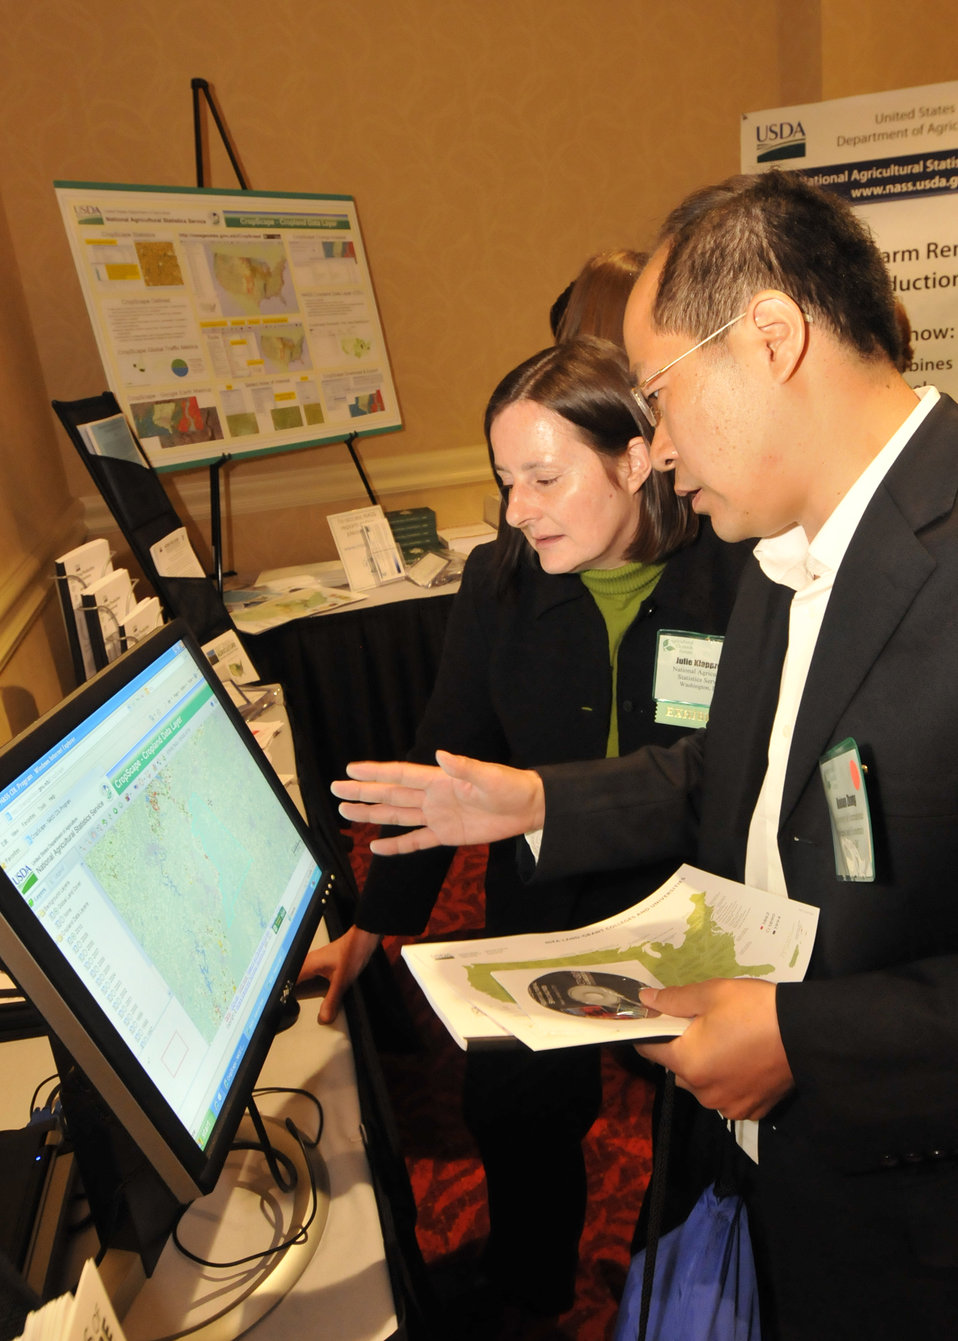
World Agricultural Outlook Board (WAOB) Forum USDA displays in the Exhibit Hall at the Crystal City Marriott in Arlington, VA, on Thursday, February 24, 2011.